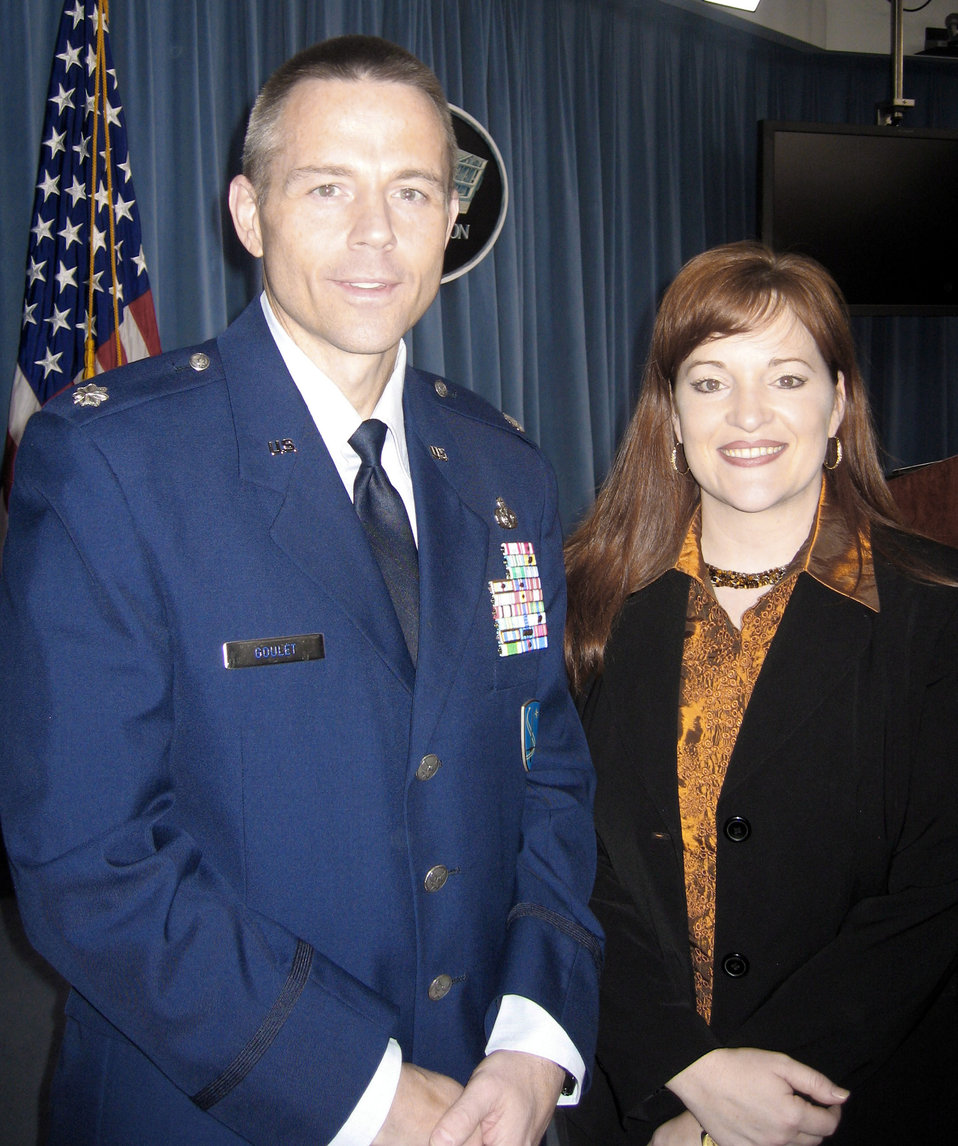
DOD teacher works to connect educators worldwide

Dorothy Goff Goulet, the Department of Defense Education Activity's 2009 Teacher of the Year, pauses with her husband, Lt. Col. Wayne Goulet, in the Defense Department's media briefing room. She and 14 other district teachers of the year saw some of the building's highlights after a welcome from Defense Secretary Robert M. Gates.